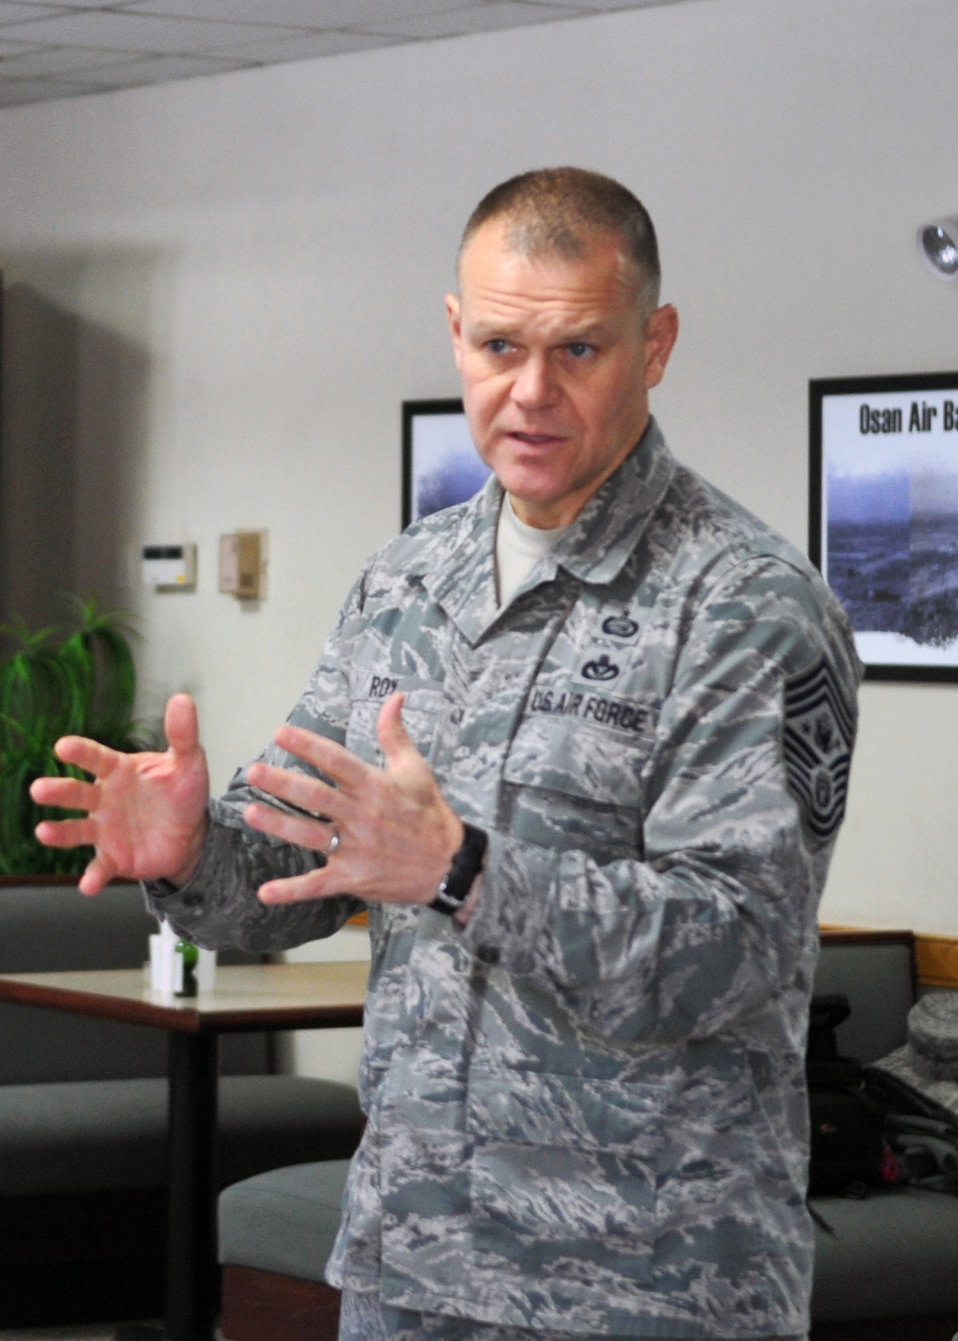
CMSAF visits Osan Air Base

Chief Master Sgt. of the Air Force James Roy addresses 51st Fighter Wing Airmen, Dec. 31, 2010, at Osan Air Base, South Korea. Chief Roy discussed issues regarding enlisted perspective and key issues across the Air Force.